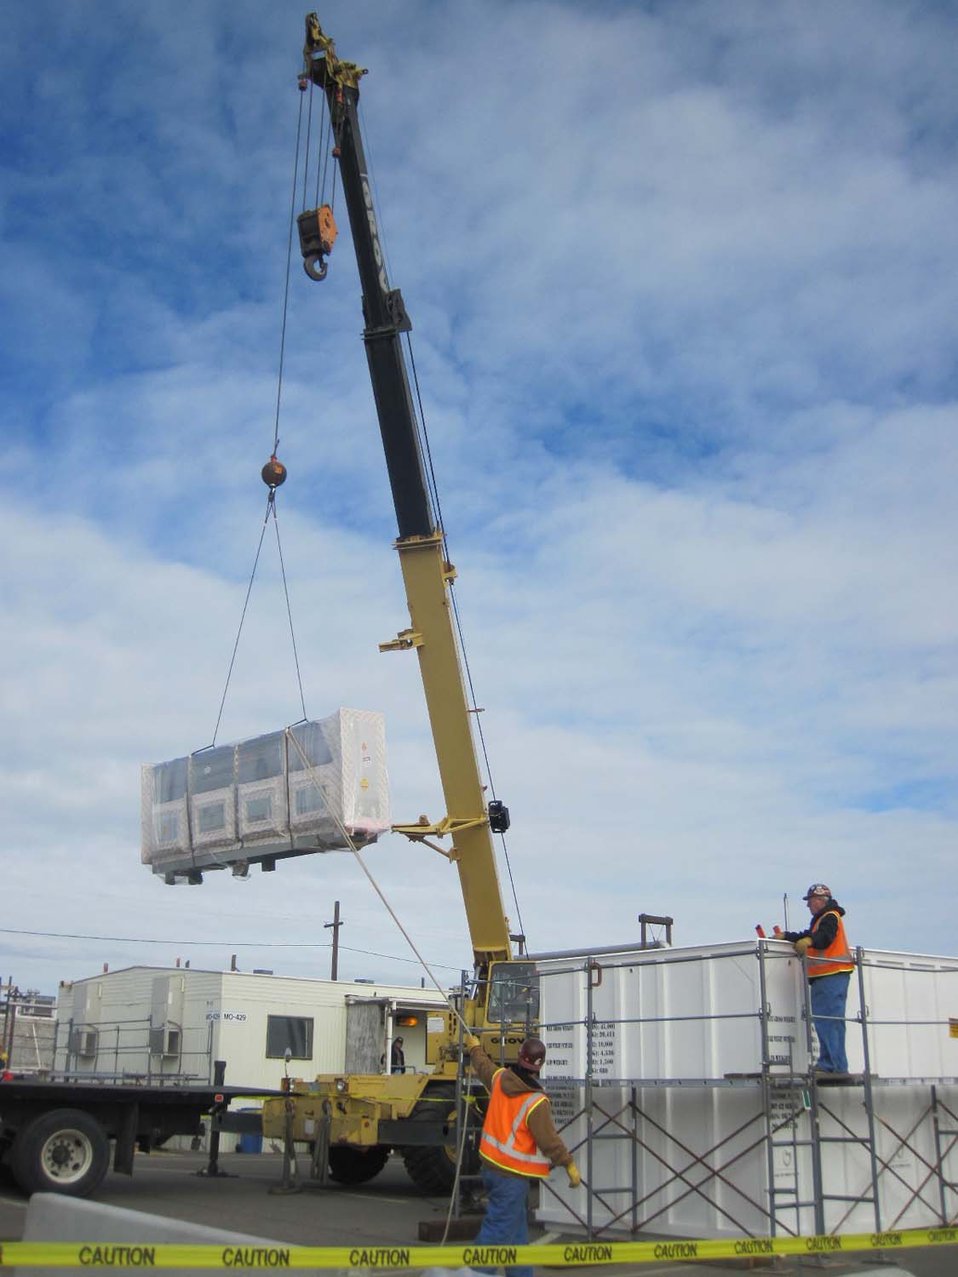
Hanford Richland Cleanup

The Hanford Site is using Recovery Act funds to remove glove boxes from the Plutonium Finishing Plant in preparation for demolition of the facility.